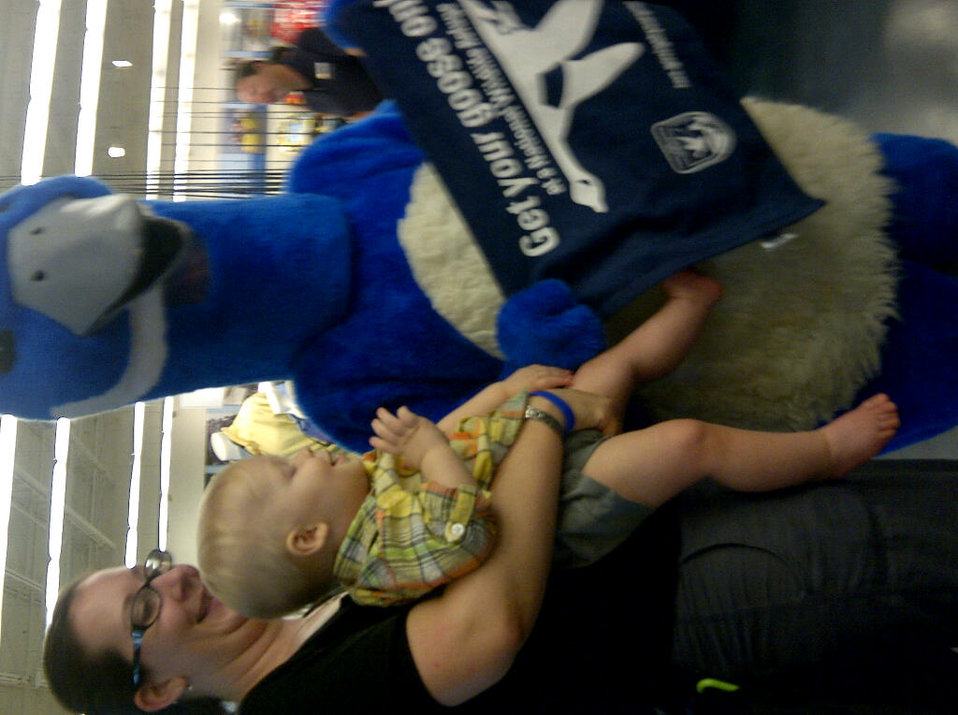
Get Your Goose On!